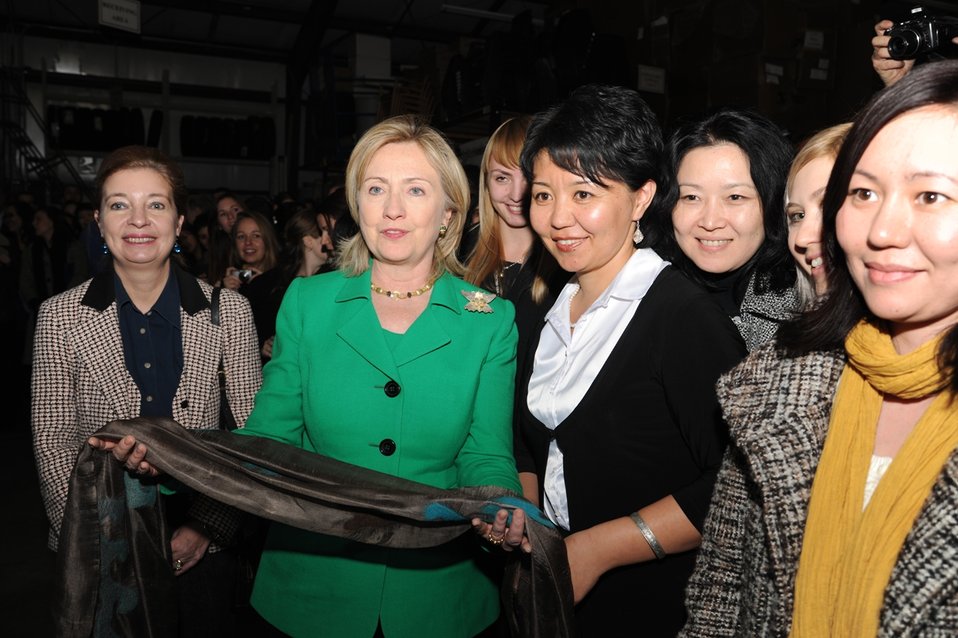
Secretary Clinton Receives a Gift

U.S. Secretary of State Hillary Rodham Clinton receives a gift from the Foreign Service Nationals at U.S. Embassy Bishkek in Bishkek, Kyrgyzstan, on December 2, 2010.